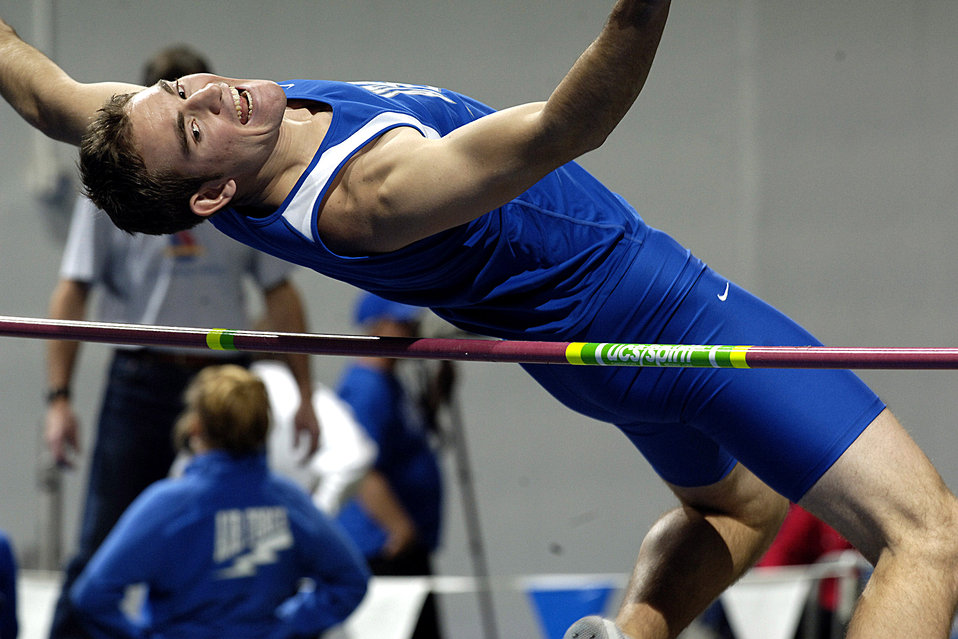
High jump

U.S. Air Force Academy Falcon junior Skylar Morgan competes in high jump as the Air Force track and field team officially opened the season by hosting the annual Air Force All-Comers Meet Jan. 13 at Colorado Springs, Colo. Morgan was the top collegiate athlete in the event after clearing a height of 6 feet.